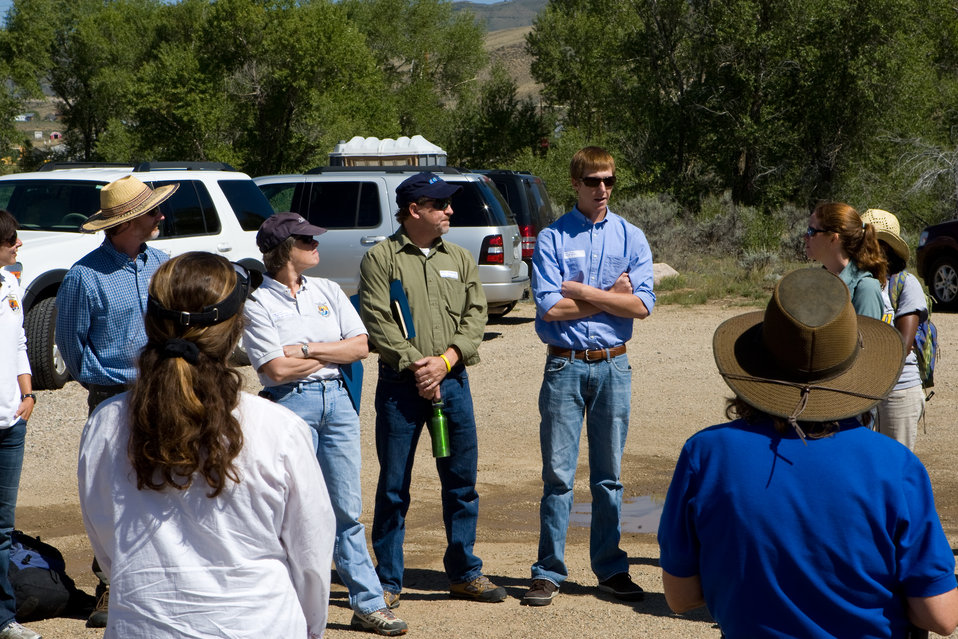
Colorado Rare Plant Conservation Initiative

The Colorado Rare Plant Conservation Initiative (RPCI) is a partnership of 23 statewide and regional agencies, private organizations, and academic institutions working to conserve 121 rare plants in Colorado. As part of these efforts the group developed the Colorado Rare Plant Conservation Strategy, developed Best Management Practices to reduce energy development impacts, addressed climate change, and developed focused strategies for the conservation of individual species at eight priority landscapes. The group has also worked to coordinate volunteer efforts for plant conservation across the state.